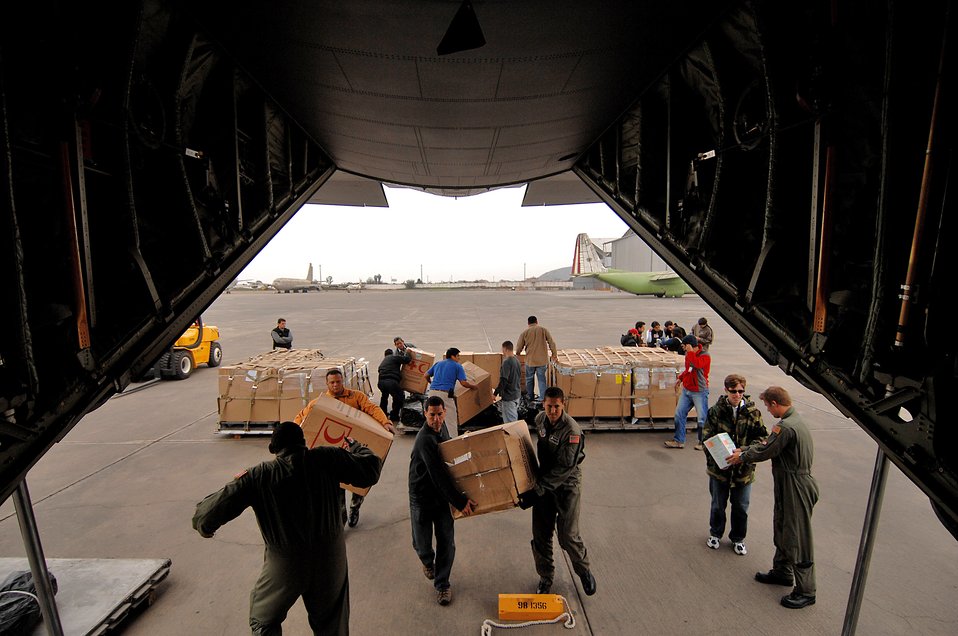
Peruvian support

Crew members of the 135th Airlift Squadron from Baltimore and aid workers load earthquake relief supplies onto a C-130 Hercules Aug. 19 in Lima, Peru. The supplies will be taken to the victims of an 8.0 magnitude earthquake that hit parts of Western Peru Aug. 15, and took the lives of more than 500 people and injured more than 1,500. Around 80,000 Peruvians have been affected by the earthquake, and 80 percent of the homes were destroyed in the city of Pisco.